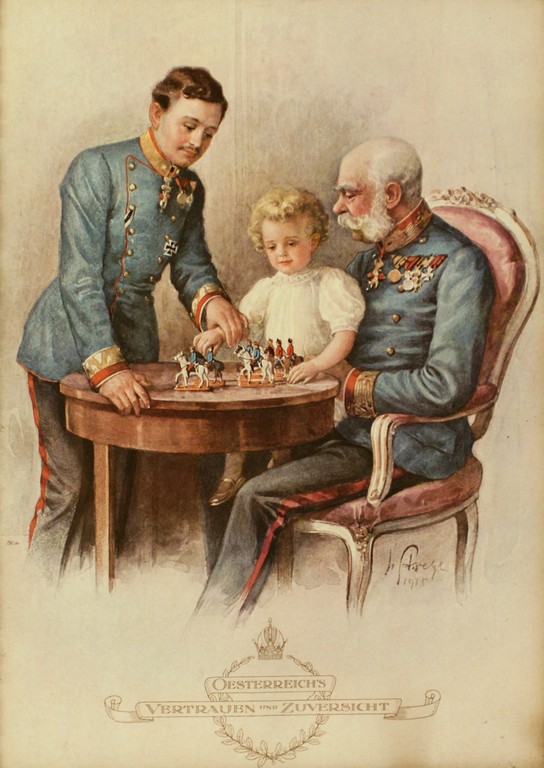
Deutsch: 'Österreichs Vertrauen und Zukunft'. Kaiser Franz Joseph, Erzherzog Karl und Erzherzog Otto mit Spielzeugsoldaten, Farblithografie, 1915; Schloß Schönbrunn